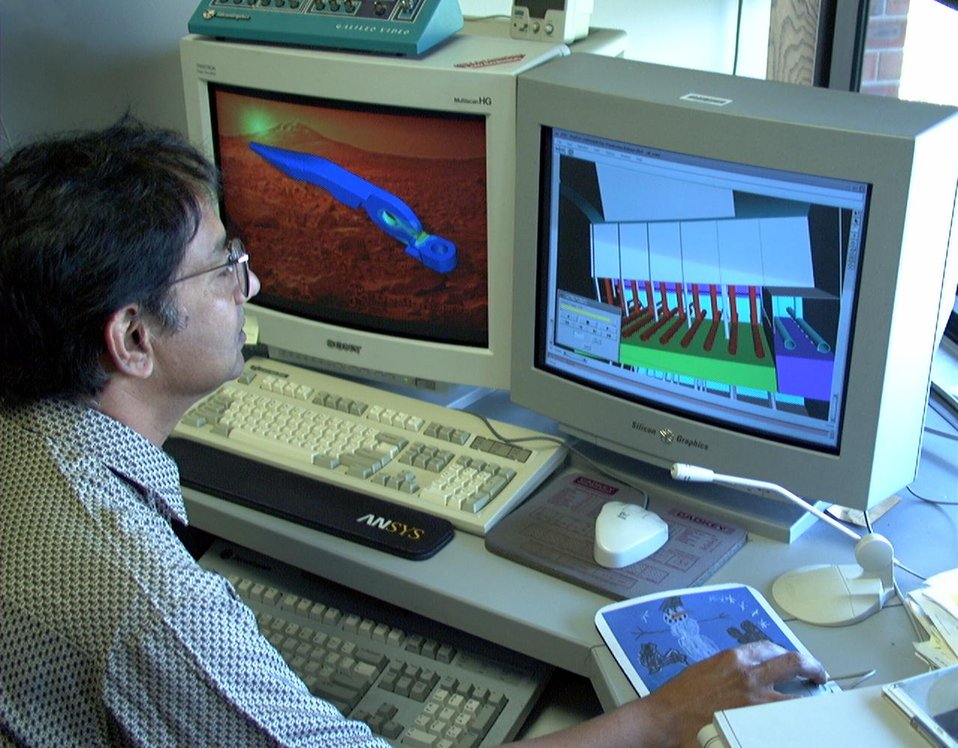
COMPUTER ANIMATION OF MAIN DIRECT CONTACT CONDENSER, DESIGNED TO BOOST GEOTHERMAL POWER AT THE GEYSERS IN CALIFORNIA.

RESEARCHERS FROM DOE'S NATIONAL RENEWABLE ENERGY LABORATORY WORKING WITH CALPINE CORPORATION OF SAN JOSE, CA. DESIGNED THE DIRECT CONTACT CONDENSERS AT THE GEYSERS GEOTHERMAL POWER PLANT.